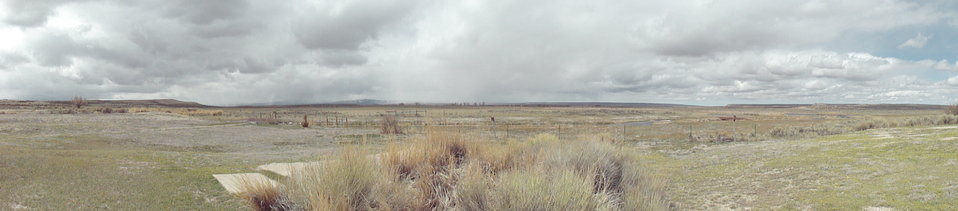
Visiting Saratoga National Fish Hatchery

In April of 2014, regional office employees visited Saratoga National Fish Hatchery to learn more about its efforts towards recovering the Wyoming toad (Bufo baxteri).

The hatchery adopted a unique role in becoming the first unit in the National Fish Hatchery System to become involved in rearing endangered amphibians. The Wyoming toad was a common sight on areas of the Laramie Plains, Albany County, Wyoming, into the early 1970s but the species' populations crashed in the mid-1970s. The Wyoming toad was listed as endangered by the U.S. Fish & Wildlife Service in January 1984. Found only in southwestern Wyoming, the Wyoming toad is considered the most endangered amphibian in North America. The hatchery maintains a captive population for breeding, rearing, and refugia, and the offspring from this program will be used for reintroduction efforts.